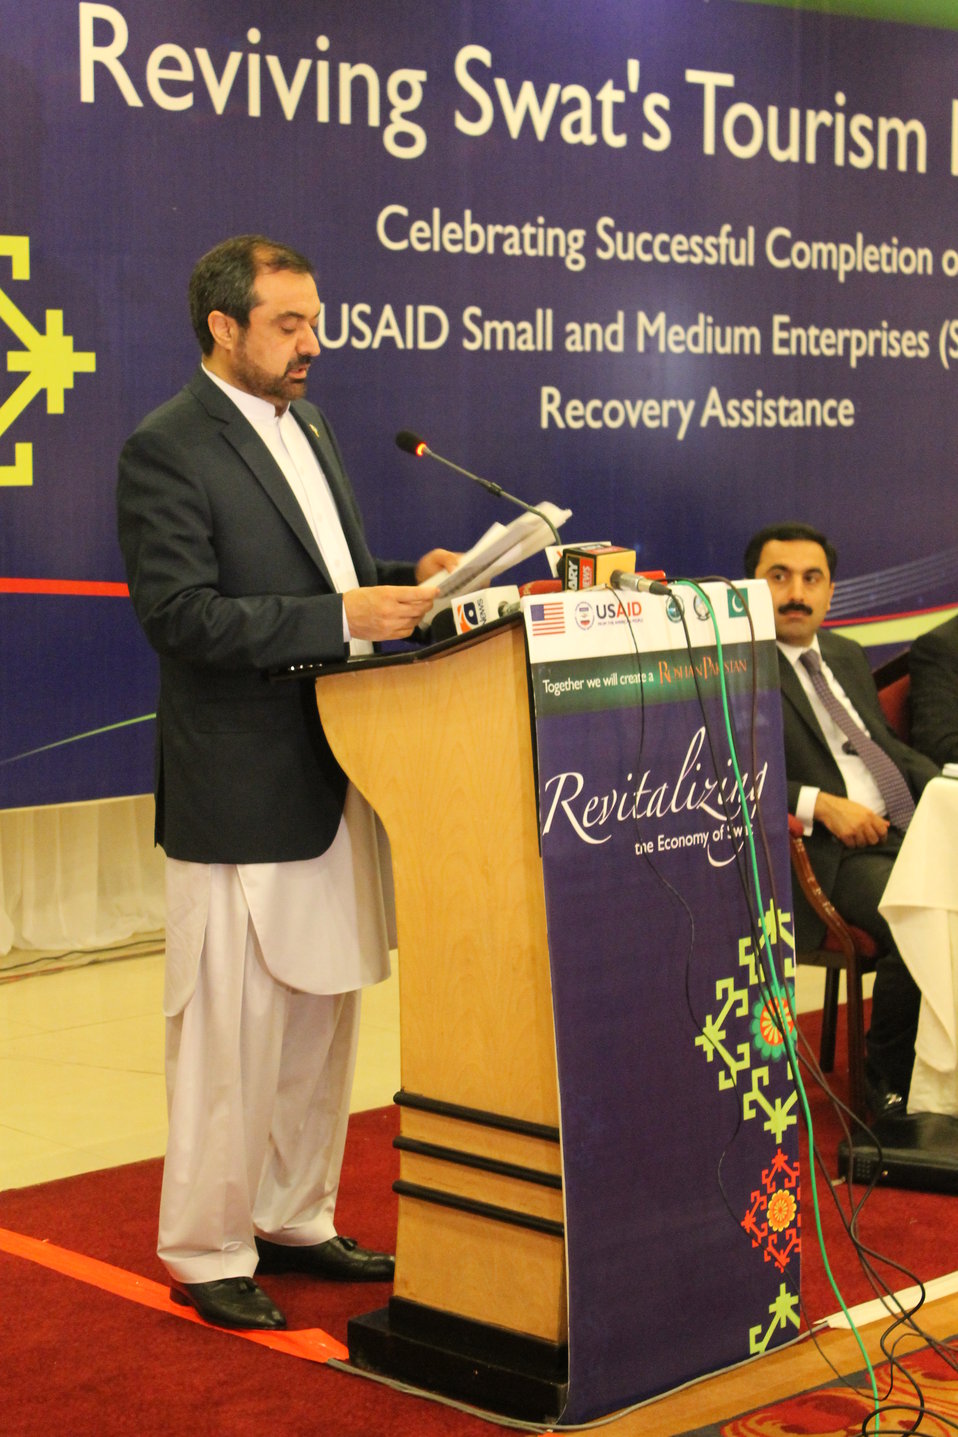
Graduation event of USAID Firms Project's Malakand Small and Medium Enterprises (SME) Recovery Assistance Program

Governor, Khyber Pakhtunkhwa, Engr. Shaukaullah Khan, lauded the efforts of USAID Firms Project in bringing the economy of Malakand back on track.